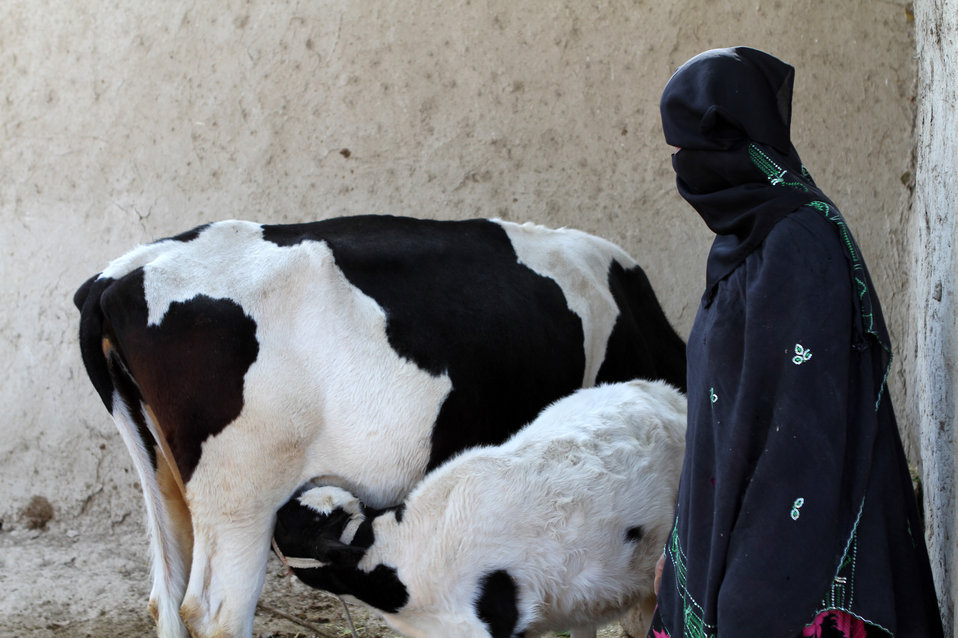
USAID funded Milk Processing Center